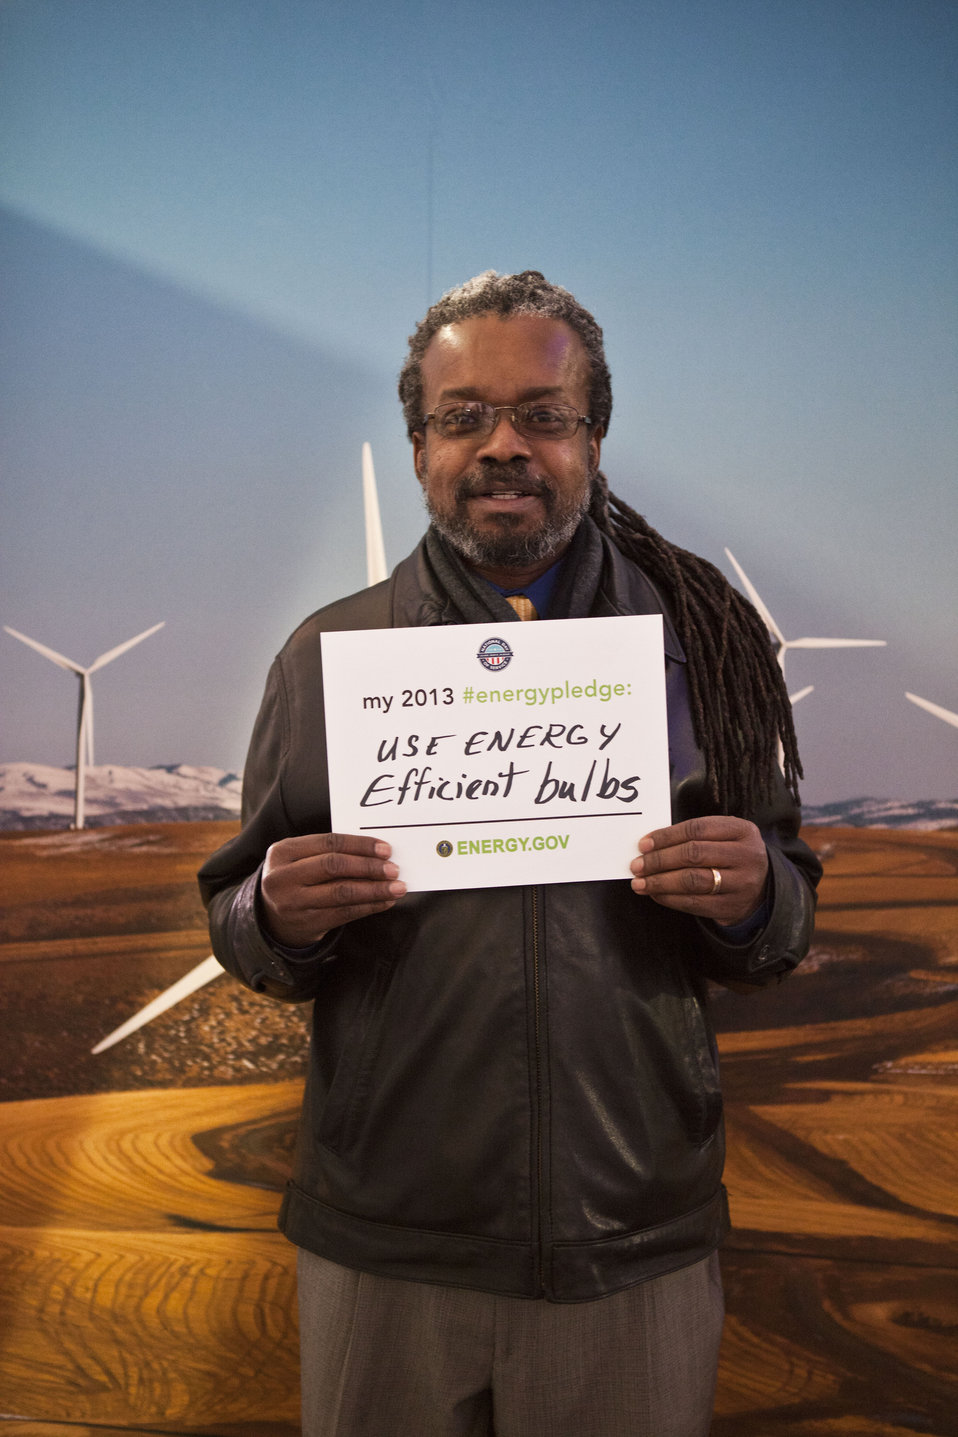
What's your #energypledge?